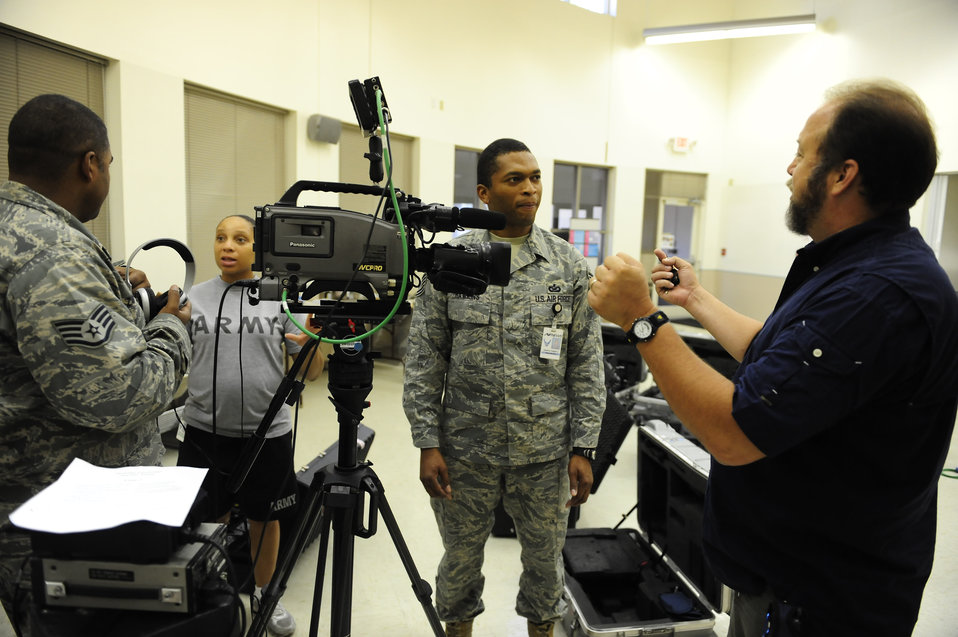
Holiday Greetings teams ready to deploy

Erich Schwab (right), holiday greetings coordinator, goes over slating information with Tech. Sgt. Dwight Hawkins while Staff Sergeant James Zannetti gets shooting tips from Army Staff Sgt. Kim Williams Aug. 27, 2009, during early packing and preparations for upcoming holiday greetings. Three teams will depart shortly after Labor Day and will set up at overseas locations through the latter part of October. The three NCOs are broadcasters with the Joint Hometown News Service in San Antonio.